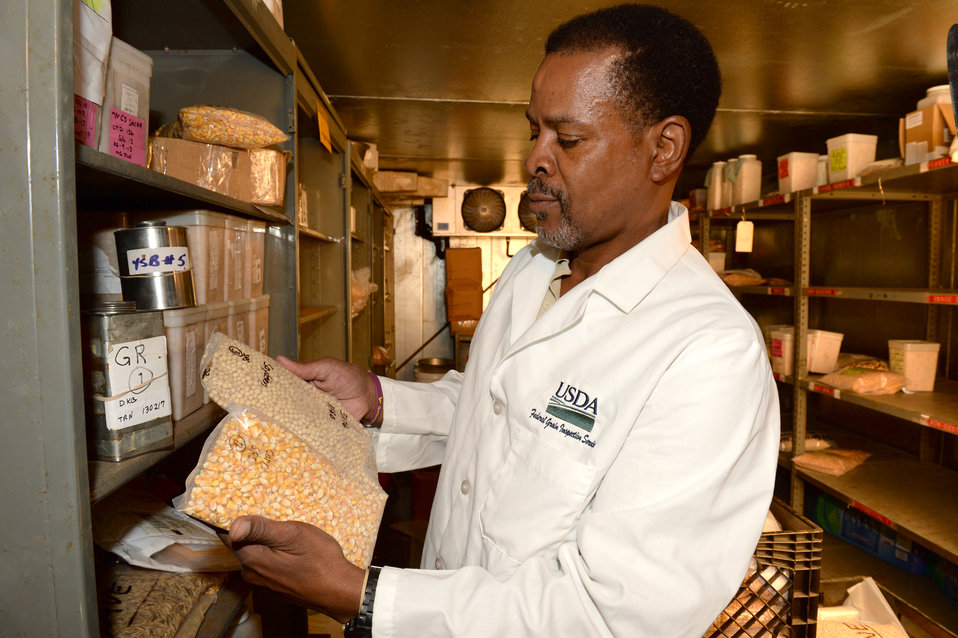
U.S. Department of Agriculture (USDA) Grain Inspection, Packers and Stockyards Administration (GIPSA) Federal Grain Inspection Service (FGIS) employee examine grain samples stored at the FGIS inspection laboratory in New Orleans, LA on Monday, Nov. 18, 2013.